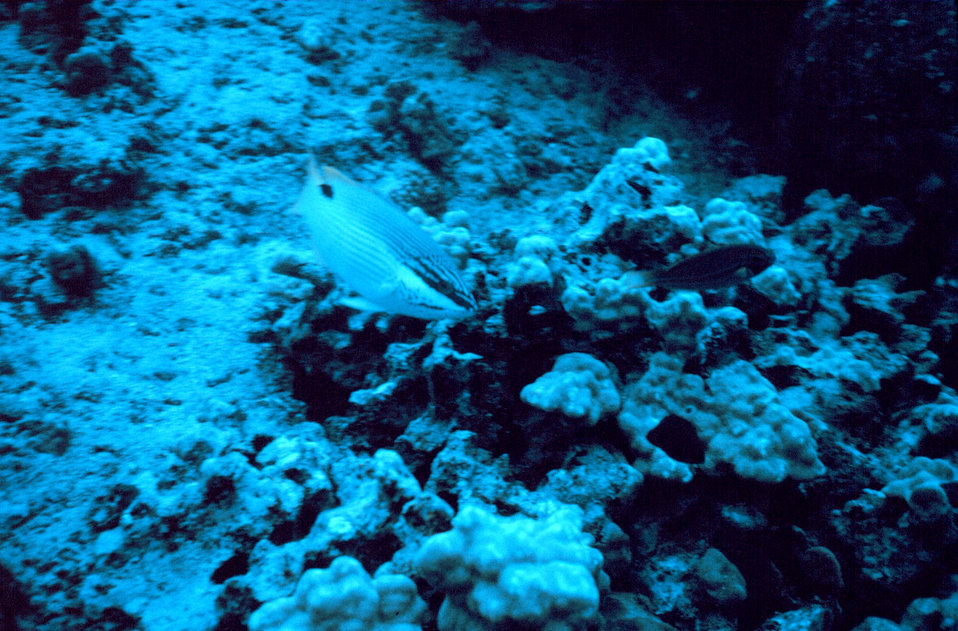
Wrasse - Bodianus bilunulatus.